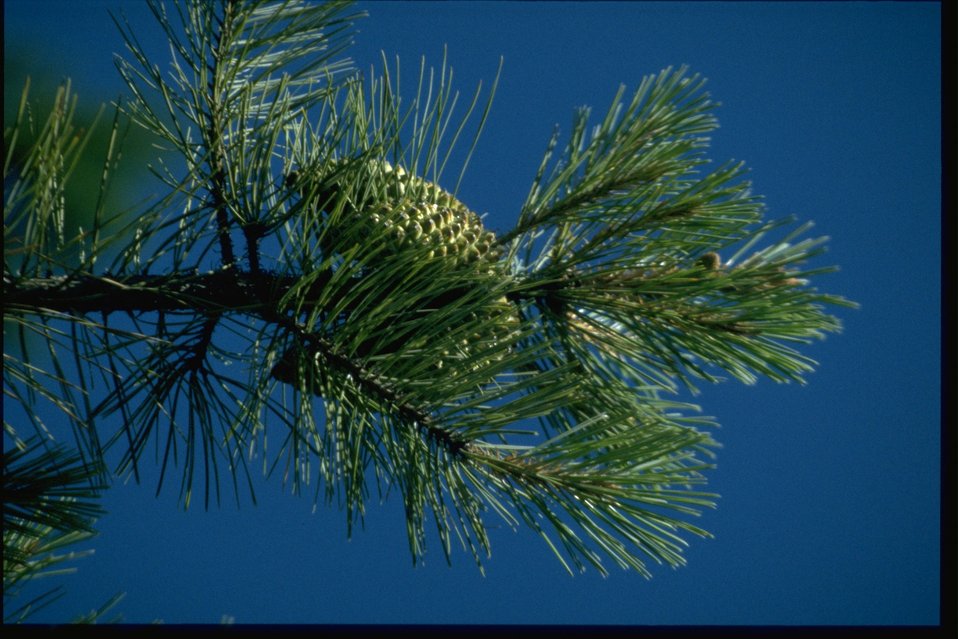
Farshot of Knobcone Pine, Pinus attenuata.